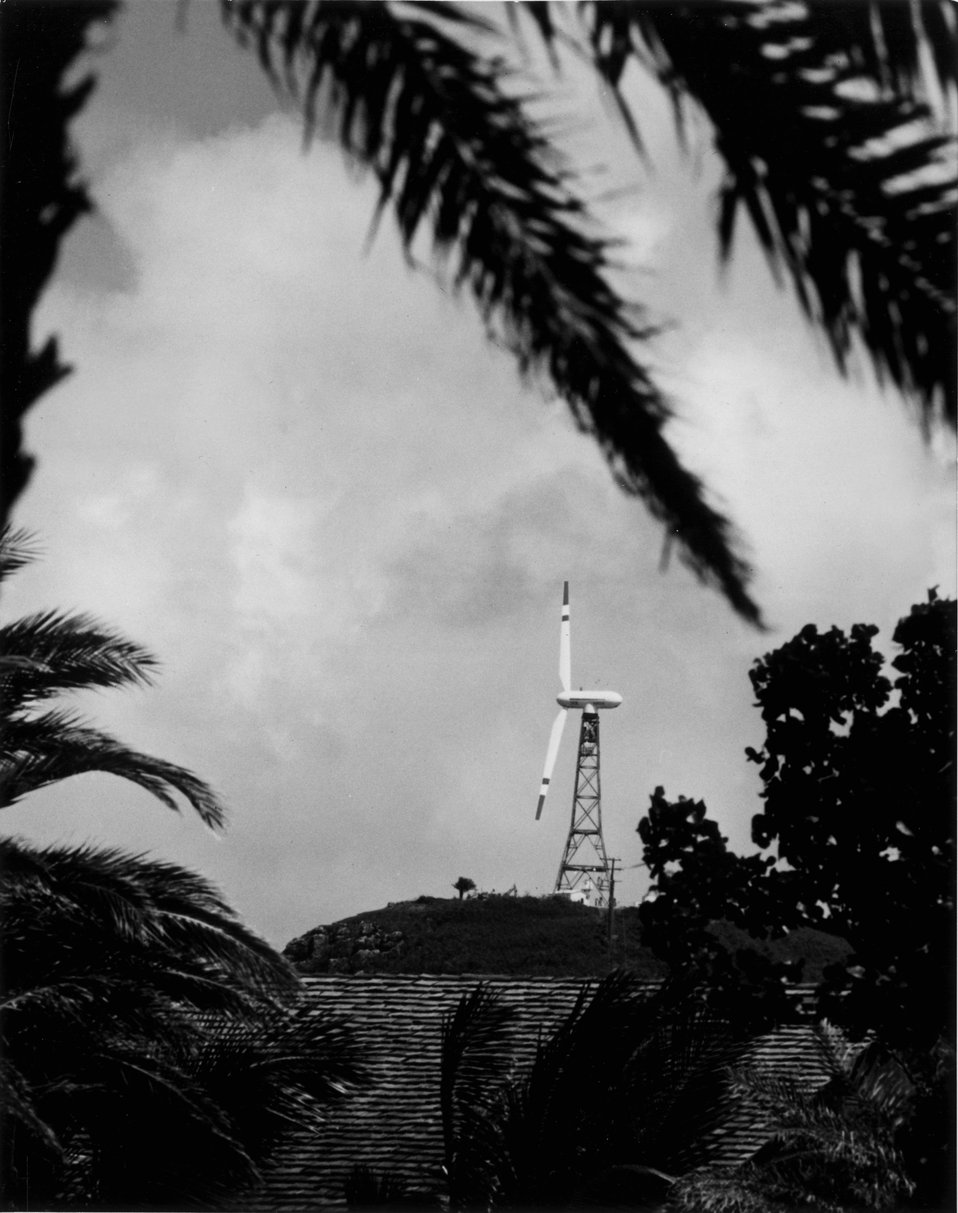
The ocean breezes off the north shore of Oahu, Hawaii, known for producing giant waves for the world's best surfing, now will be captured and converted into electricity. c. 1980